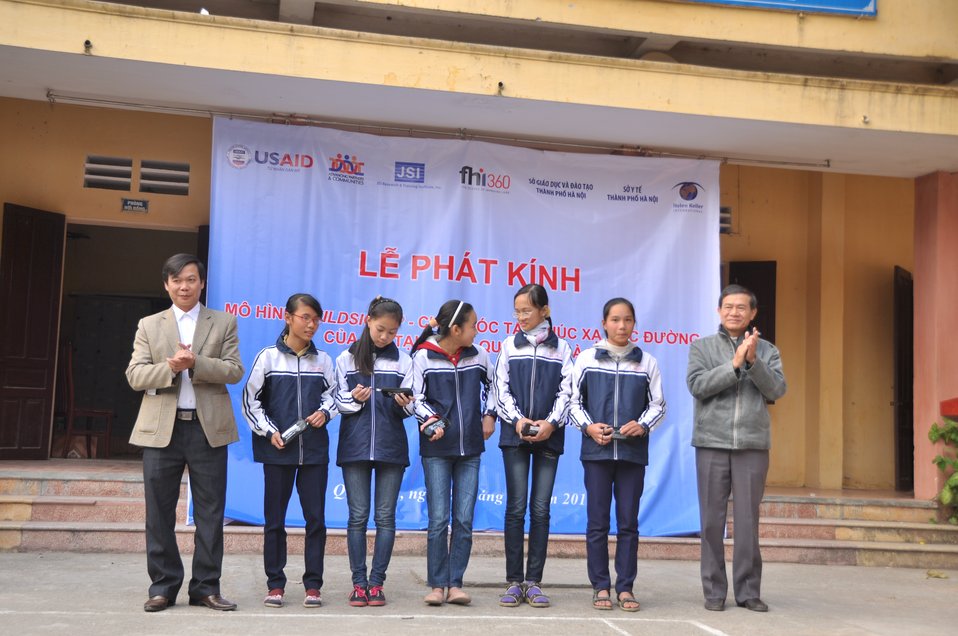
USAID supports distribution of eyeglasses to pupils and teachers in Quoc Oai, Hanoi.

Kieu Phu Junior Secondary School, Quoc Hoai, Hanoi, December 23, 2013.